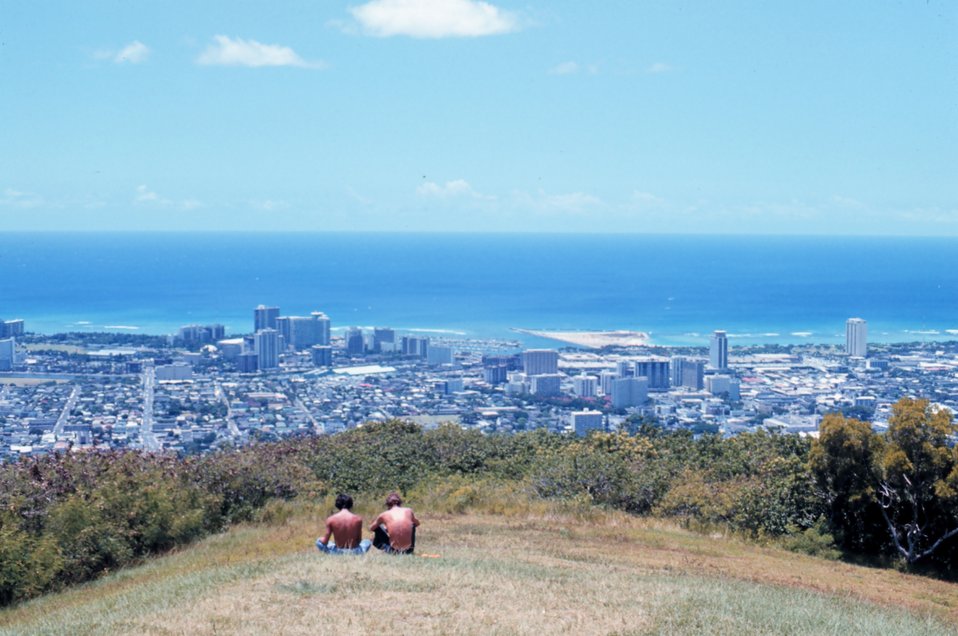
View of Honolulu from St. Louis Heights